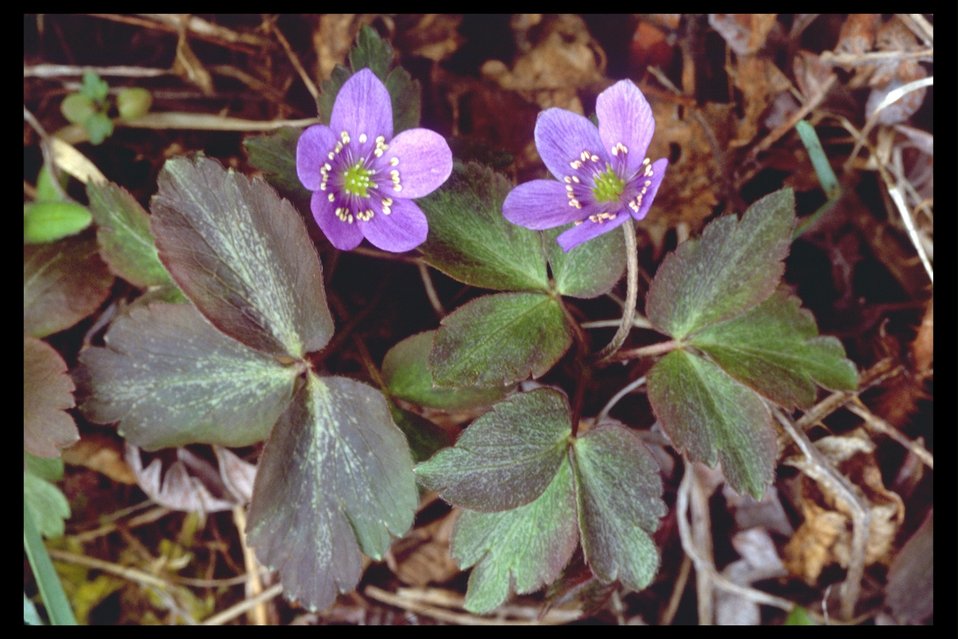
Oregon Anemone, also called the Blue Anemone, (Anemone oregana) found at Board Mountain near the West Fork Trail Creek Drainage.